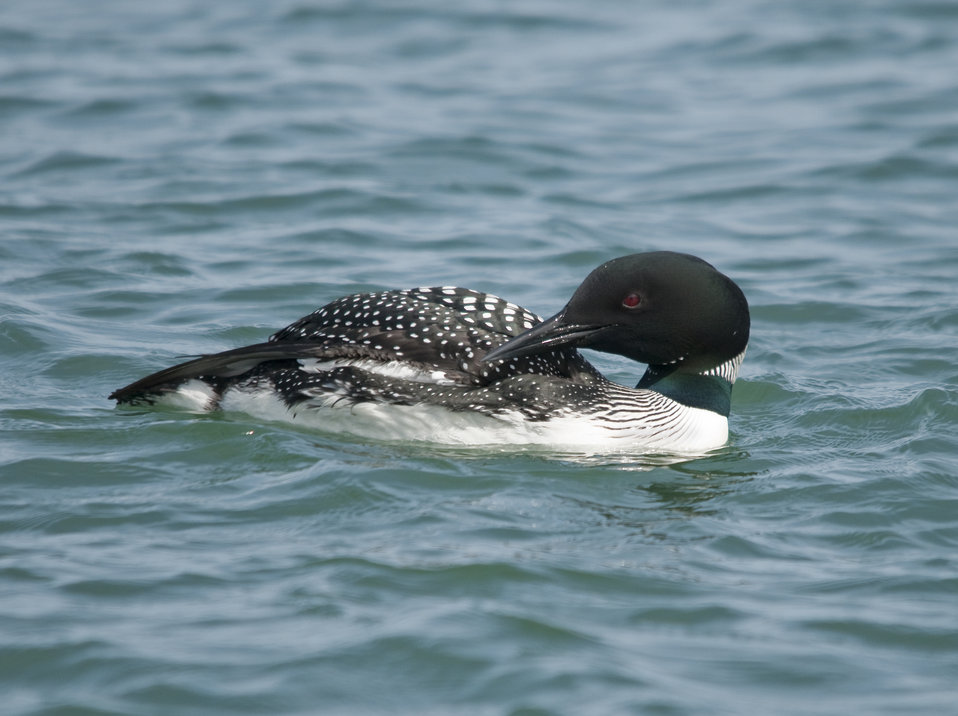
Common Loon in breeding plumage

Common Loons can be seen all along the Oregon Coast including Bandon Marsh, Siletz Bay, and Nestucca Bay National Wildlife Refuges.